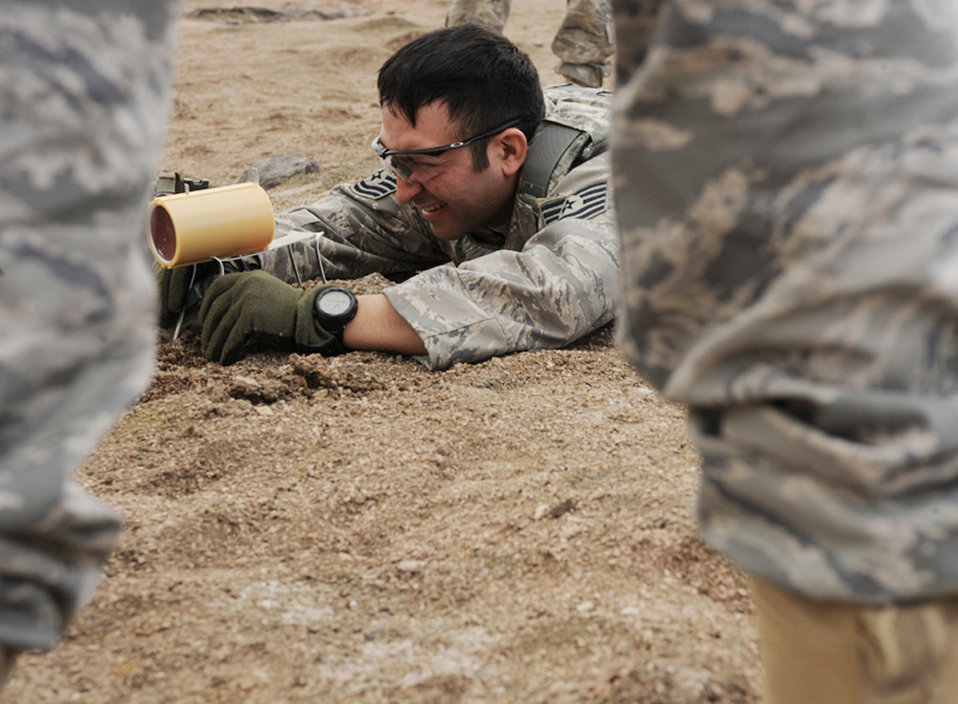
EOD team charge an explosion

Tech. Sgt. Jayson Wells, an explosive ordnance disposal journeyman with the 28th Civil Engineer Squadron, aims an explosive rod at a